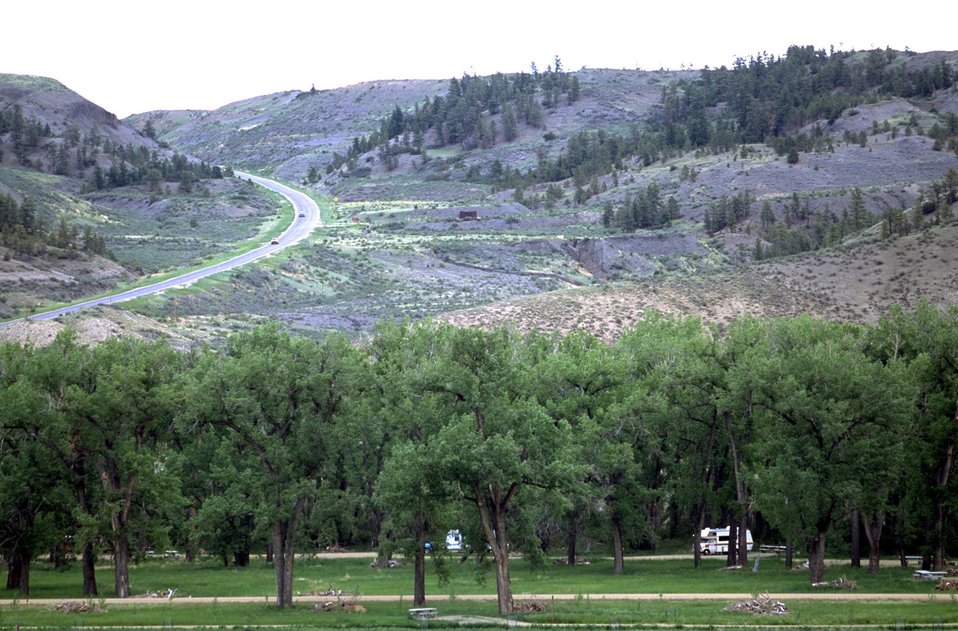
Highway 87 leading down to Kipp Recreation Site on the banks of the Missouri River